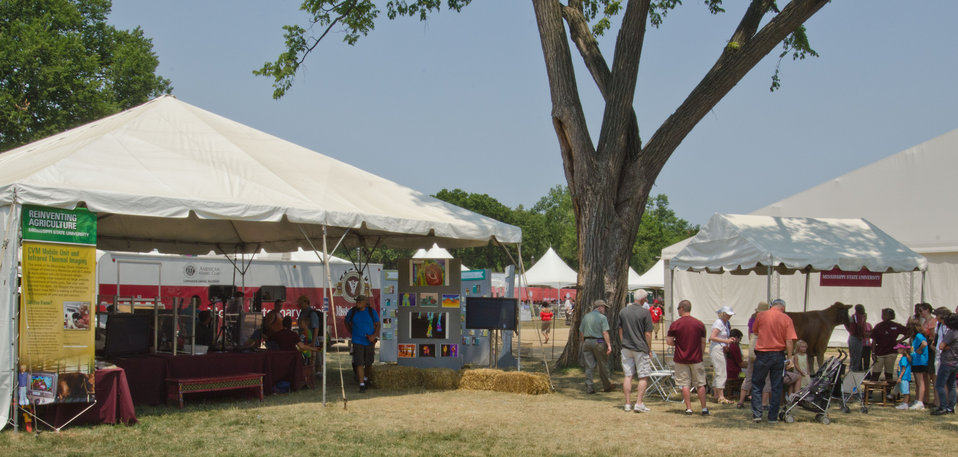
Mississippi State University (MSU) exhibition area at the 2012 Smithsonian Folklife Festival, on the National Mall in Washington, D.C. on Friday, June 29, 2012 Near by is the Mississippi State University Mobile Veterinary Clinic that serves the Northern Mississippi area by providing Spay and neuter services to those in need, and provides medical experience for students. Several hands-on stations allowed visitors to see how infrared technology is helping veterinarians identify ailments. One of the three themes this year is “Campus and Community.” It celebrates the 150 years of the USDA and the Land-Grant University System. The U.S. Department of Agriculture (USDA) and the Land-Grant system extend education across the country, contributing to American agriculture success and rural prosperity. “Campus and Community” has demonstrations, discussions, hands-on activities, and entertainment to that showcase the many ways that this partnership works to improve American agriculture and rural life.